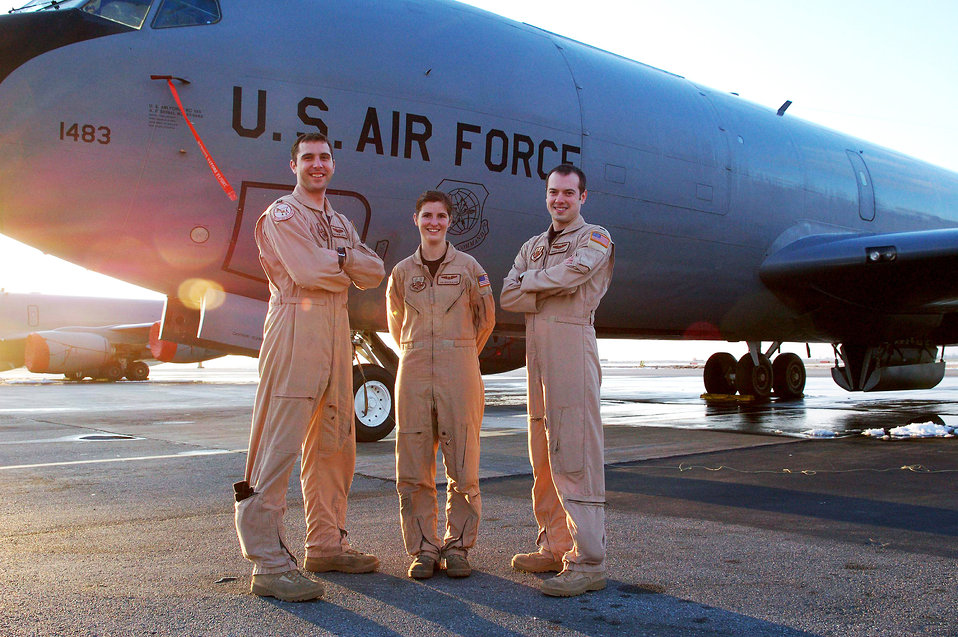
Crew navigates tanker out of trouble

Capt. Matthew Jaeger, Senior Airman Mckayla Dick and 1st Lt. Vance Feavel stand before the KC-135 Stratotanker they safely landed using Global Positioning Systems and support from a nearby C-17 Globemaster III when the navigation systems failed during a refueling sortie March 16 from Manas Air Base, Kyrgyzstan. The crew is deployed from the 92nd Air Refueling Squadron at Fairchild Air Force Base, Wash. The pilot, Captain Jaeger, is originally from Croton, Ohio. Co-pilot Lieutenant Feavel is a native of North Pole, Alaska. Airman Dick, the boom operator, is originally from El Paso, Texas.